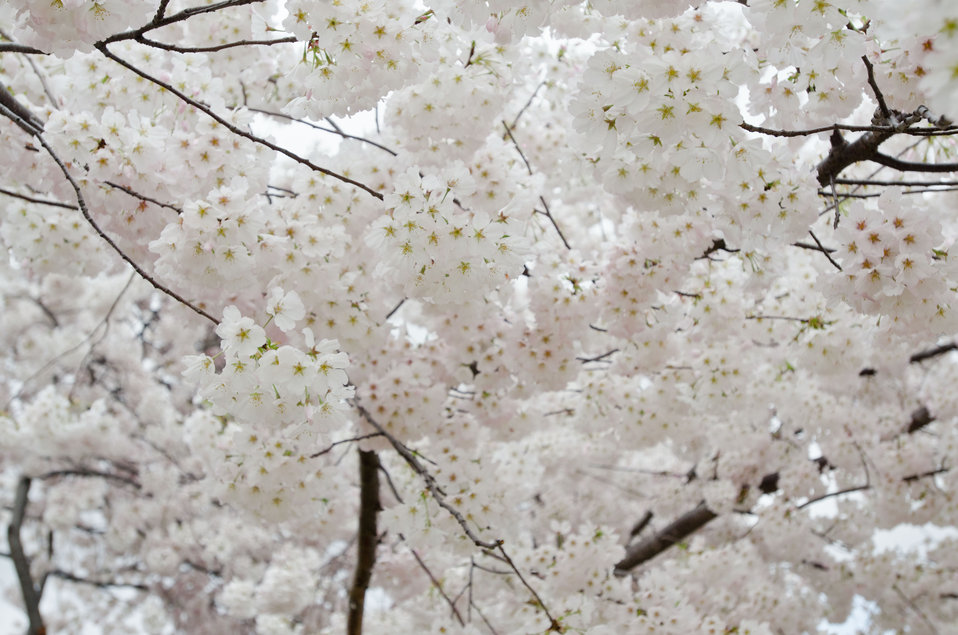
Cherry blossoms at the Tidal Basin in Washington, D.C., on Tuesday, March 20, 2012.